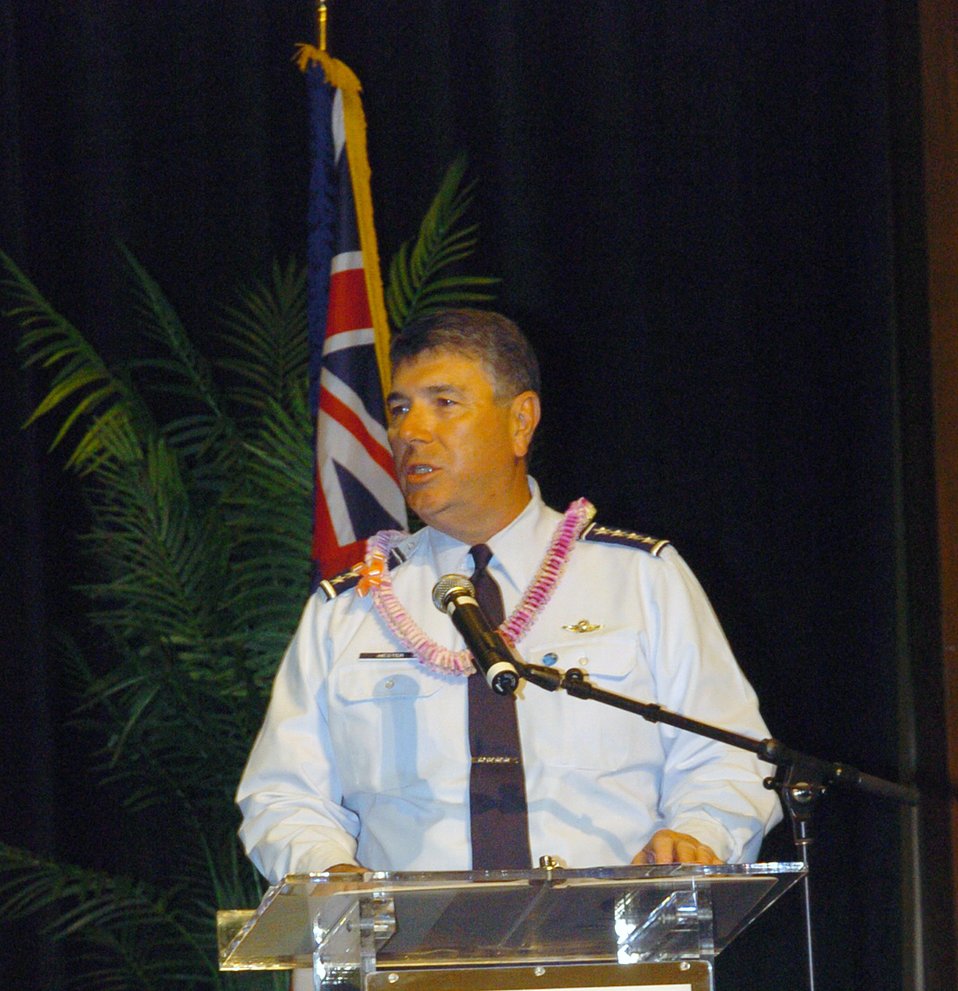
Hawaii honors servicemembers

Gen. Paul V. Hester addresses members from each branch of service and local community, during the 22nd annual Military Recognition Luncheon May 24 at the Hilton Hawaiian Village in Honolulu. General Hester, the Pacific Air Forces commander, stressed the great impact local community support has on mission sucess, and the importance of observing Memorial Day.